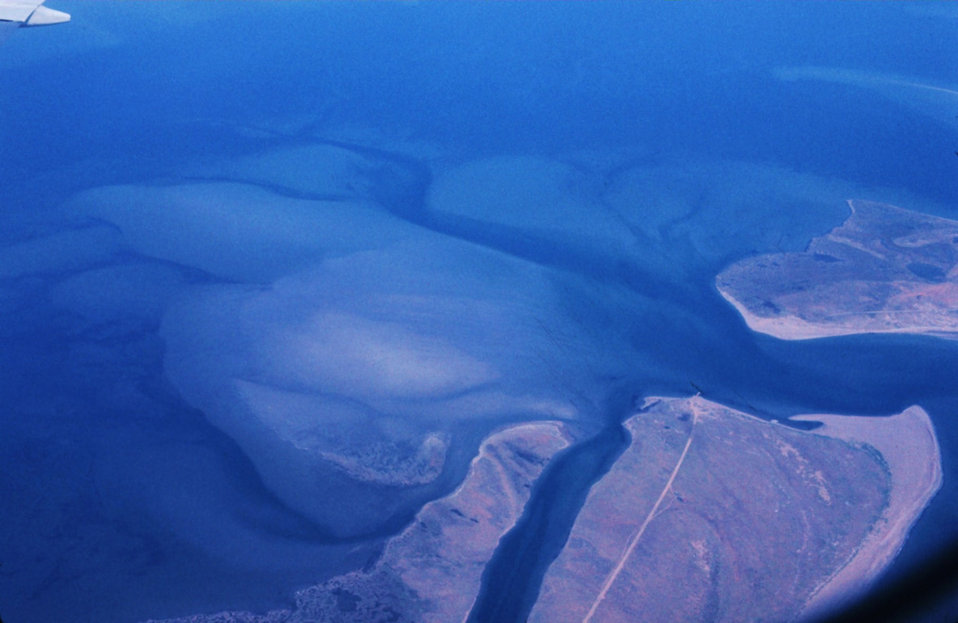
Sandy banks from the air